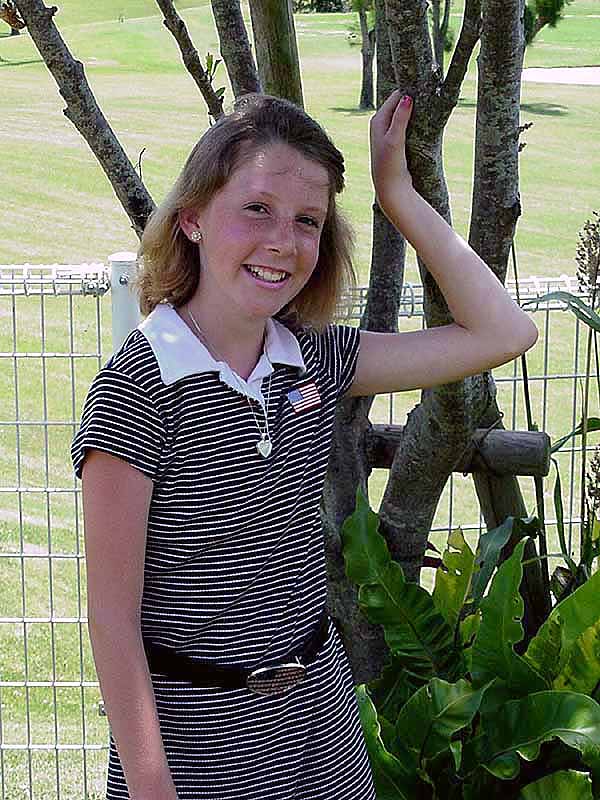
Space camp bound

WASHINGTON -- Amanda Johnson is scheduled to attend the U.S. Space Camp at Huntsville, Ala., in December. She was an eighth-grader at Vandenberg Middle School, Vandenberg Air Force Base, Calif., when selected for 2003 Bernard Curtis Brown II Memorial Space Camp Scholarship. Amanda is the daughter of Master Sgt. Larry Johnson.